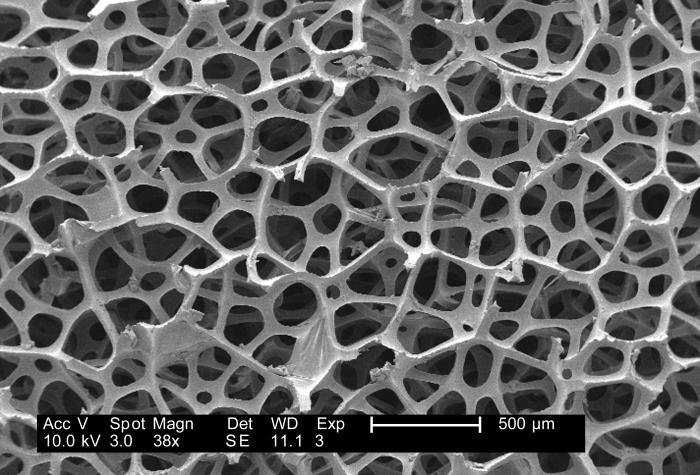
Under a low magnification of 38x, this 2007 scanning electron micrograph (SEM) depicted the fibrous configuration of a dry macrofoam sponge swabs. This swab, as well as three other materials, including polyester (see PHIL 9735), rayon (see PHIL 9734) and cotton (see PHIL 9732, and 9733), were scanned for a CDC study involving their efficiency in recovery of Bacillus anthracis bacterial spores from steel coupons that had been inoculated with a spore suspension of known concentration. See PHIL 9736, 9737, 9738, 9749, 9750, an 9752, for other views of this material. The article discussing the description of this swab material analysis, and the analytical results was published in 'Emerging Infectious Diseases', Vol. 10, No. 6, June, 2004, and was entitled, Swab Materials and Bacillus anthracis Spore Recovery from Nonporous Surfaces. A link to this article is found below.